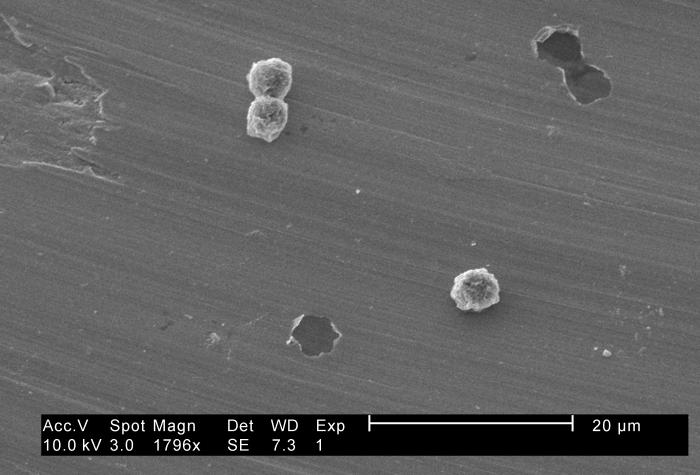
Under a moderate magnification of 1796X, this 2002 scanning electron micrograph (SEM) revealed some of the ultrastructural morphology exhibited by three Hartmannella vermiformis amoebae cysts.